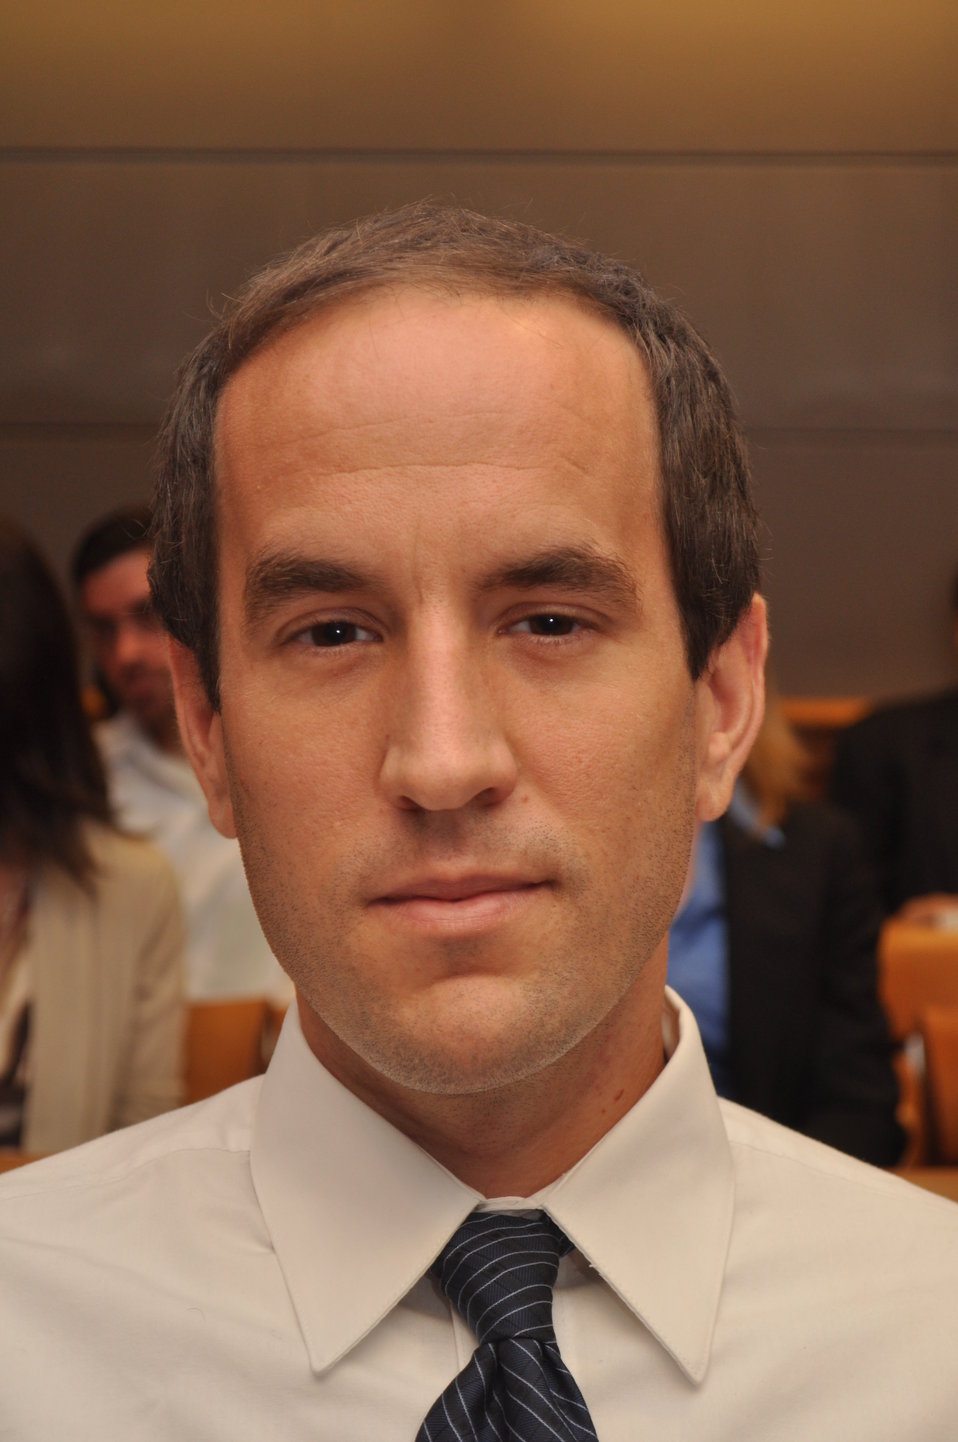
Engineers and Economists

At the August, 2011 Open Meeting the FCC recognized engineers and economists.